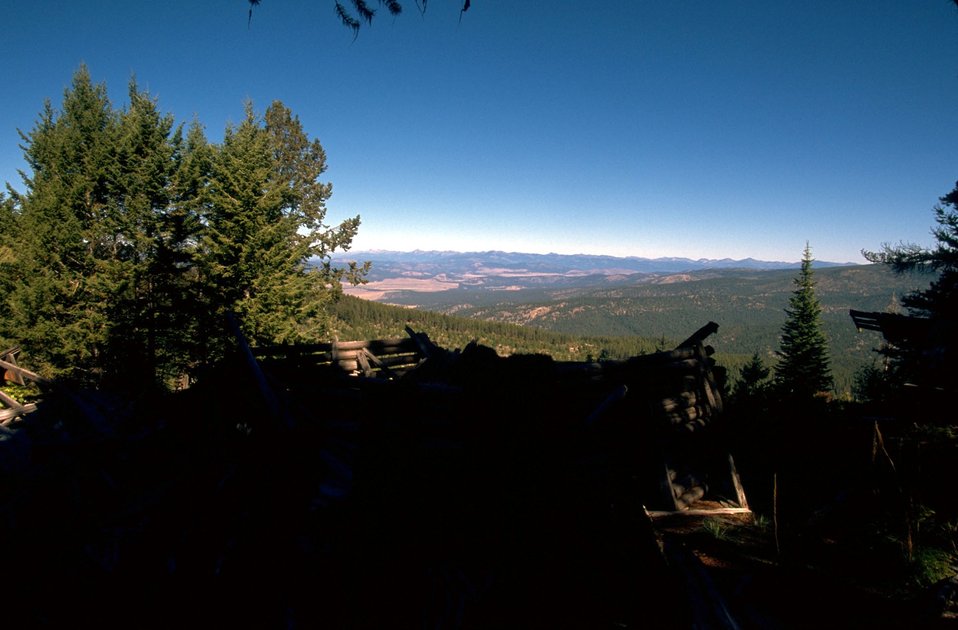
Coloma Ghost Town-collapsed cabin with Balckfoot Valley in background